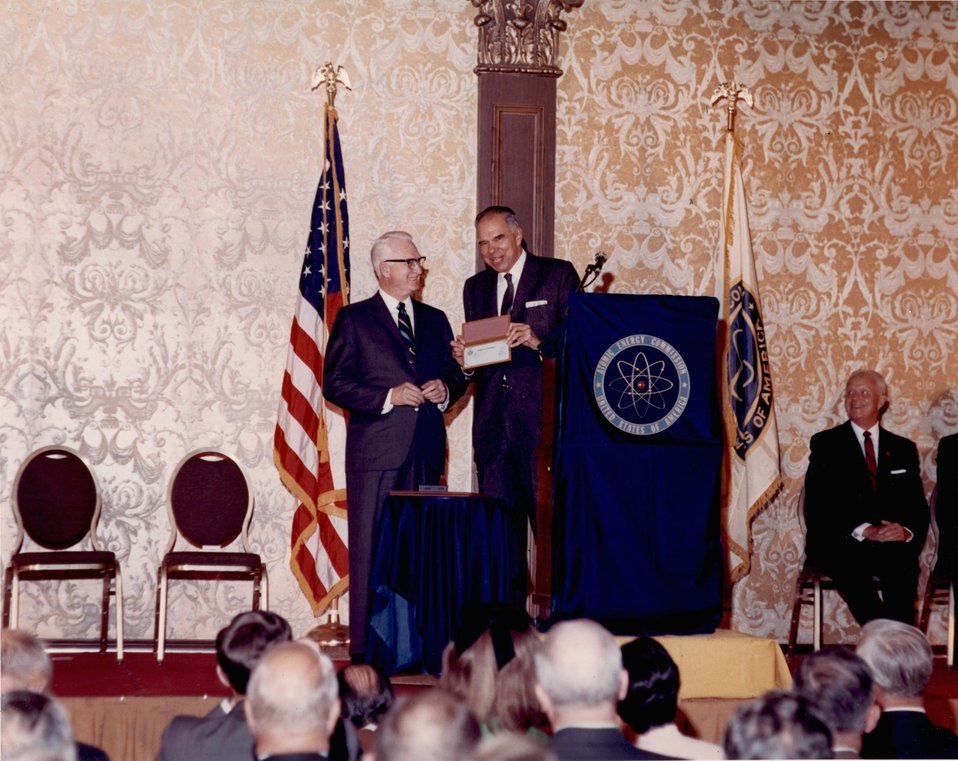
Enrico Fermi Award Ceremony. Imperial Ballroom. San Fransisco Hilton Hotel. 5:30 p.m., December 2, 1969.